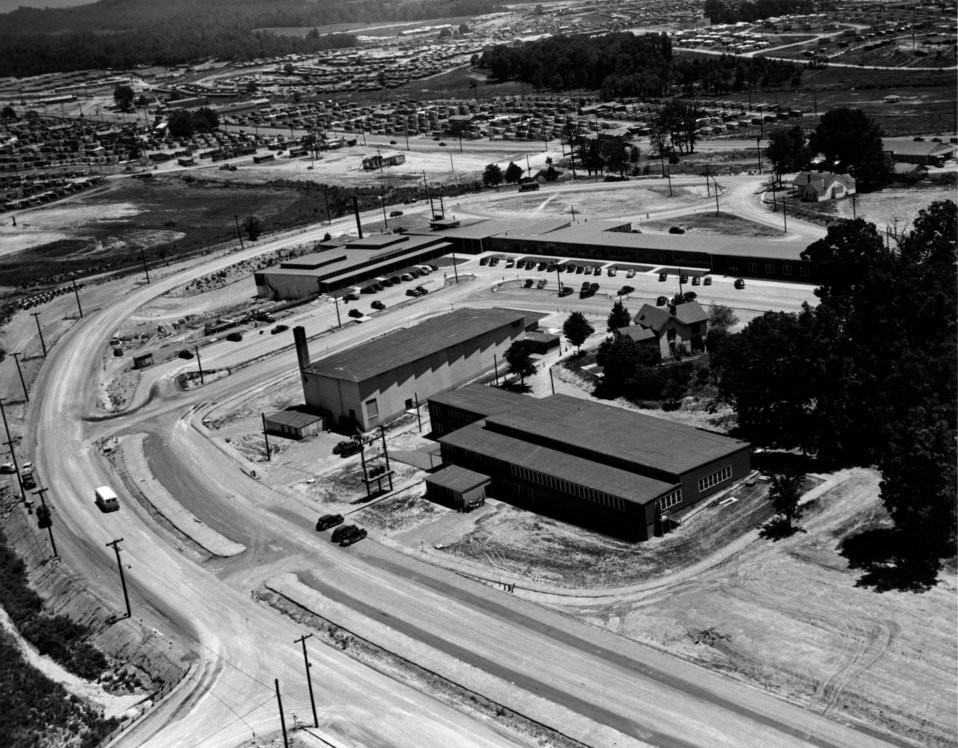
Aerial of Oak Ridge